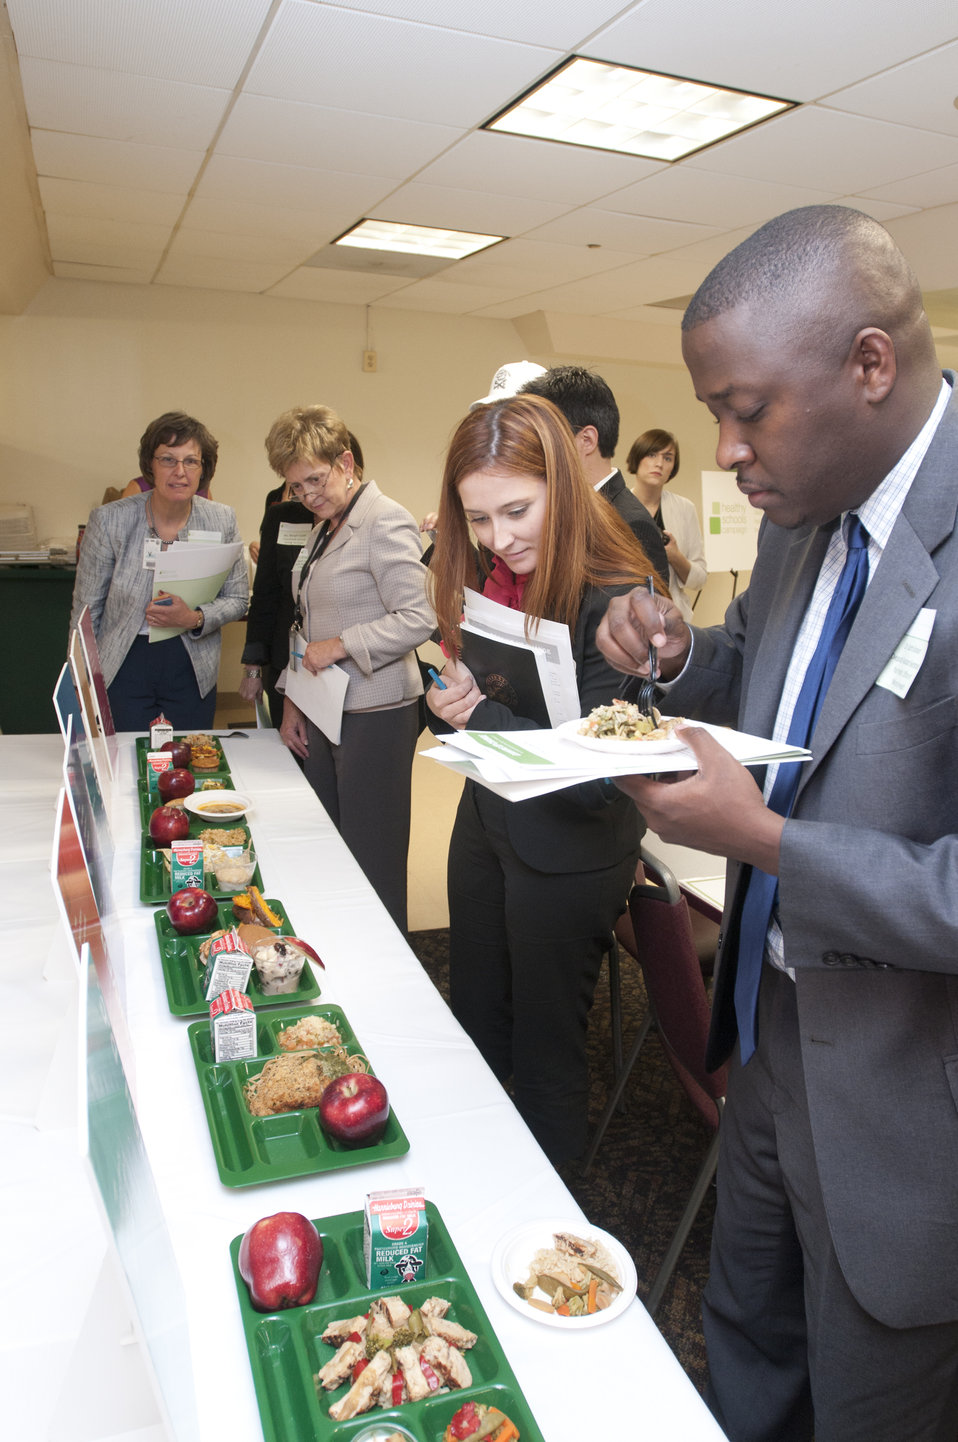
Judges compare the six finalists' meals during the Cooking Up Change, National Healthy Cooking Competition at the USDA in Washington, DC, on Monday, May 23, 2011.